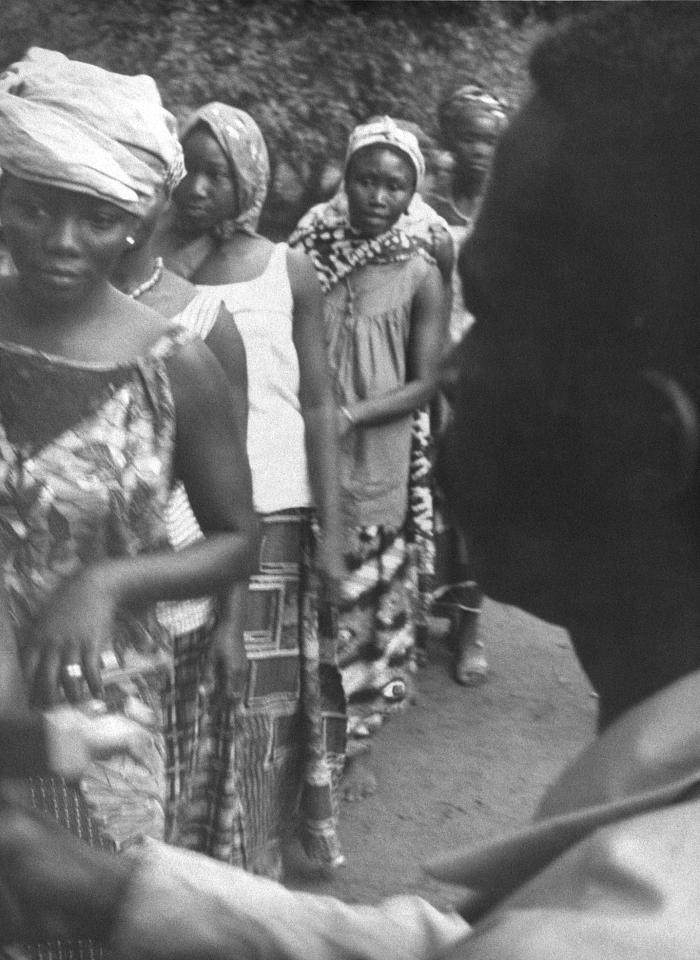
These Nigerian women were about to receive smallpox vaccinations during the country's 1960s, Smallpox Eradication Program.